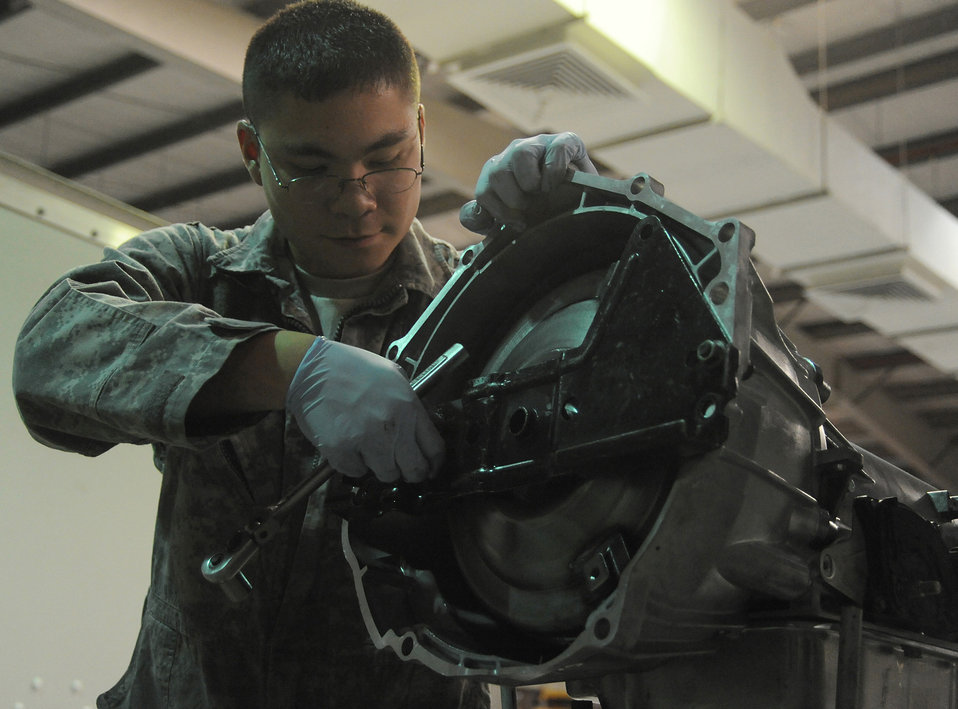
Let's get it started

Senior Airman Michael Jakubec takes off a torque converter shield from a transmission April 26 at an air base in Southwest Asia. The shield is placed on the transmission to protect the torque converter during shipping. Airman Jakubec is a 380th Expeditionary Logistics Readiness Squadron vehicle maintainer deployed from Kadena Air Base, Japan. He is from Spanaway Wash.